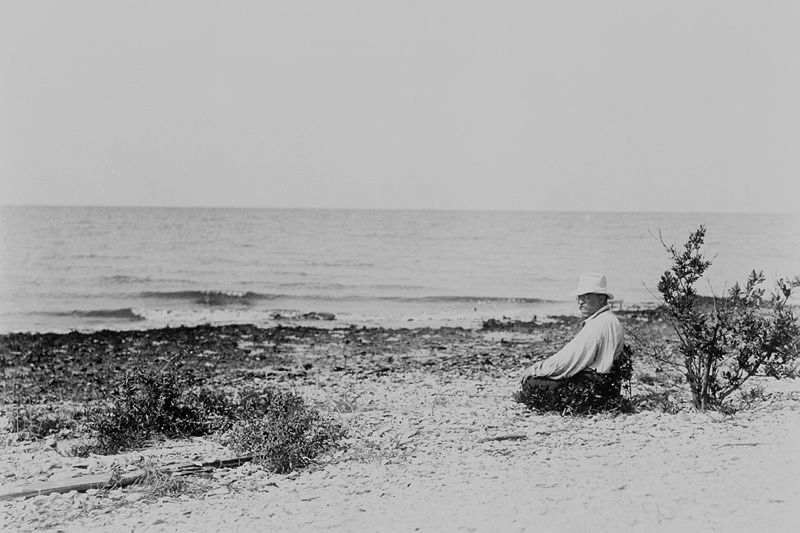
Teddy Roosevelt on Bird Island

Photo: USFWS
In 1915 Pres. Teddy Roosevelt, the father of the National Wildlife Refuge System, visited Louisiana's Breton National Wildlife Refuge. TR set aside Breton NWR in 1904, making it the second refuge in our nation's extraordinary network of public conservation lands.